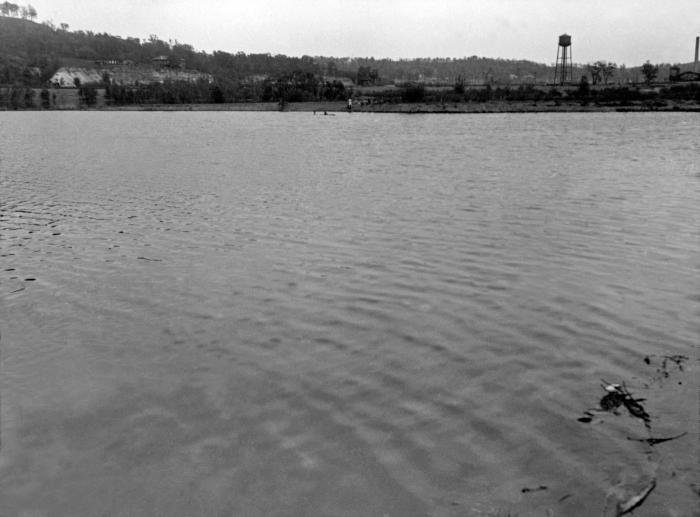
This historic image depicted some swimmers in the Mississippi River near Holman Airport, St. Paul, Minnesota, May 20, 1933. It was taken during a Minnesota Department of Health study of the public bathing and recreation areas along the river.